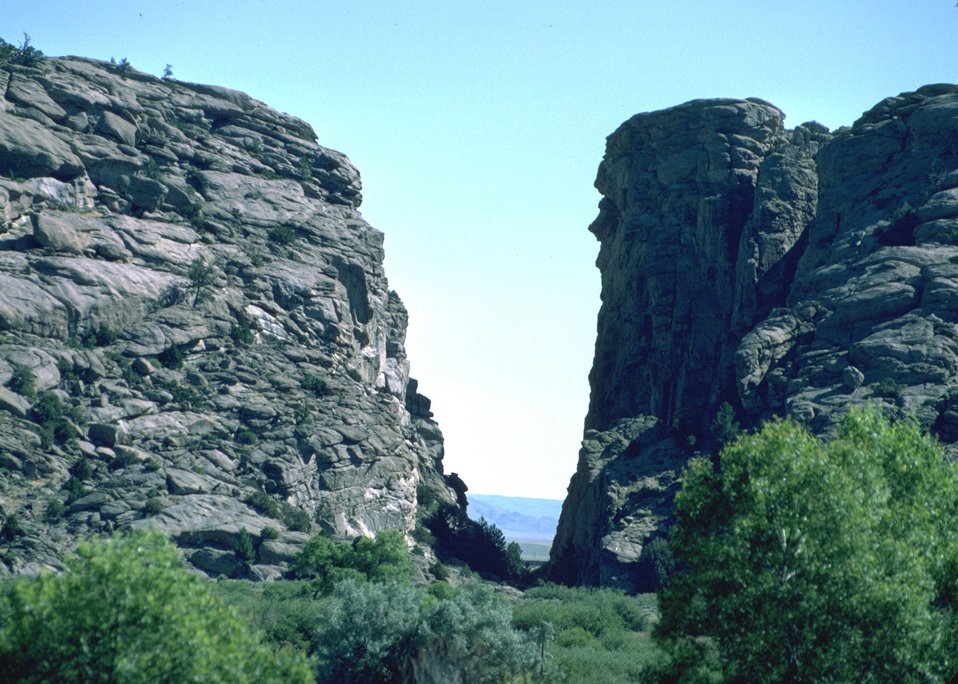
Devil's Gate historic site, Rawlins Field Office.